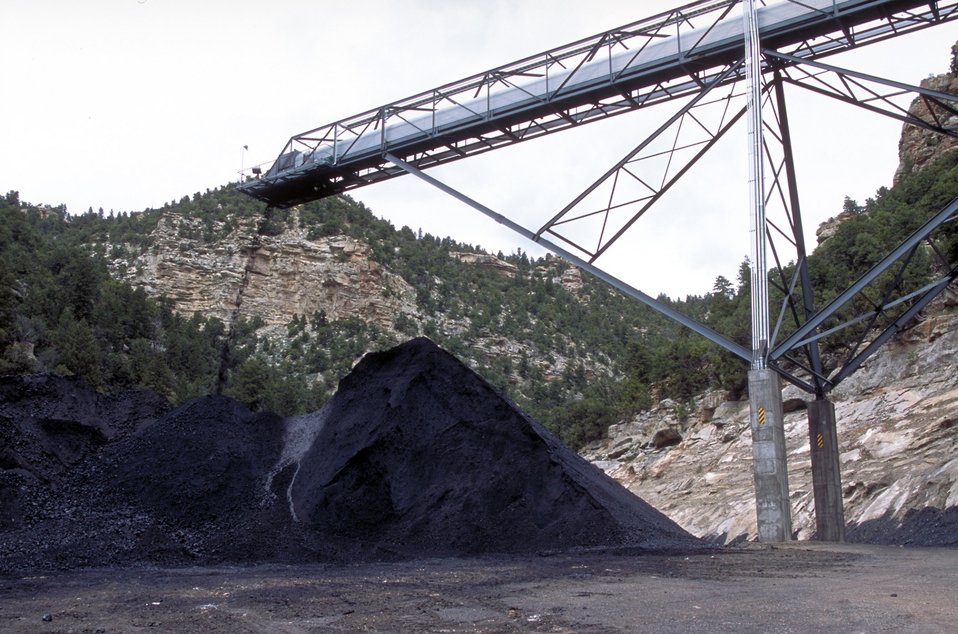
Coal production near Price, Utah.